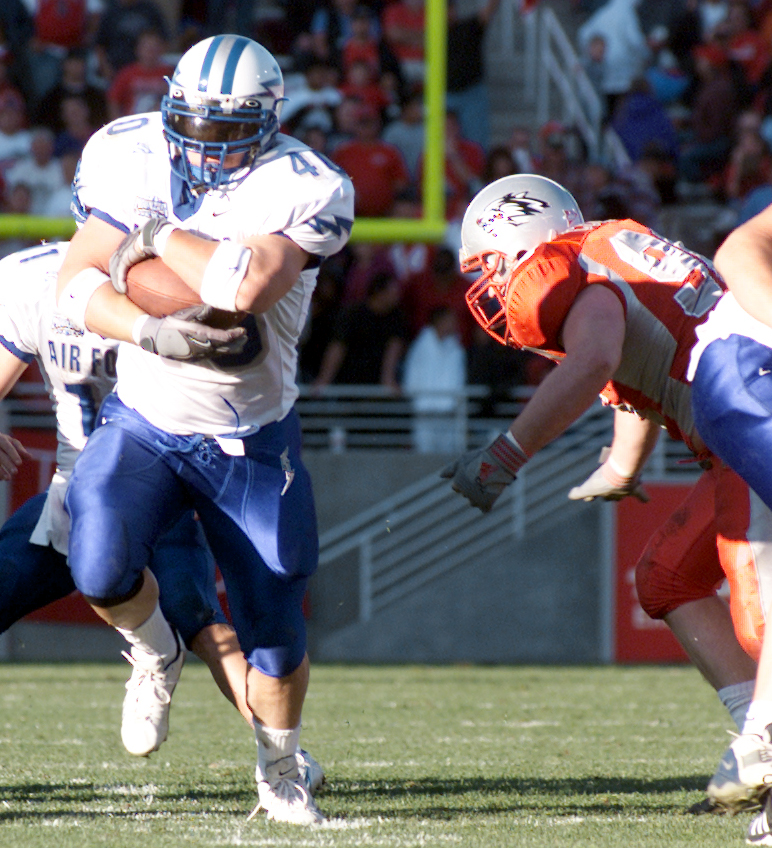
Lobos take Falcons, 24-12

ALBUQUERQUE, N.M. -- Falcons fullback Steve Massie covers the ball with both hands and plows straight ahead, after finding an unexpectedly wide running lane carved out for him up the middle. The senior carried the ball four times for 24 yards during the Falcons' 24-12 loss to the University of New Mexico on Nov. 15.